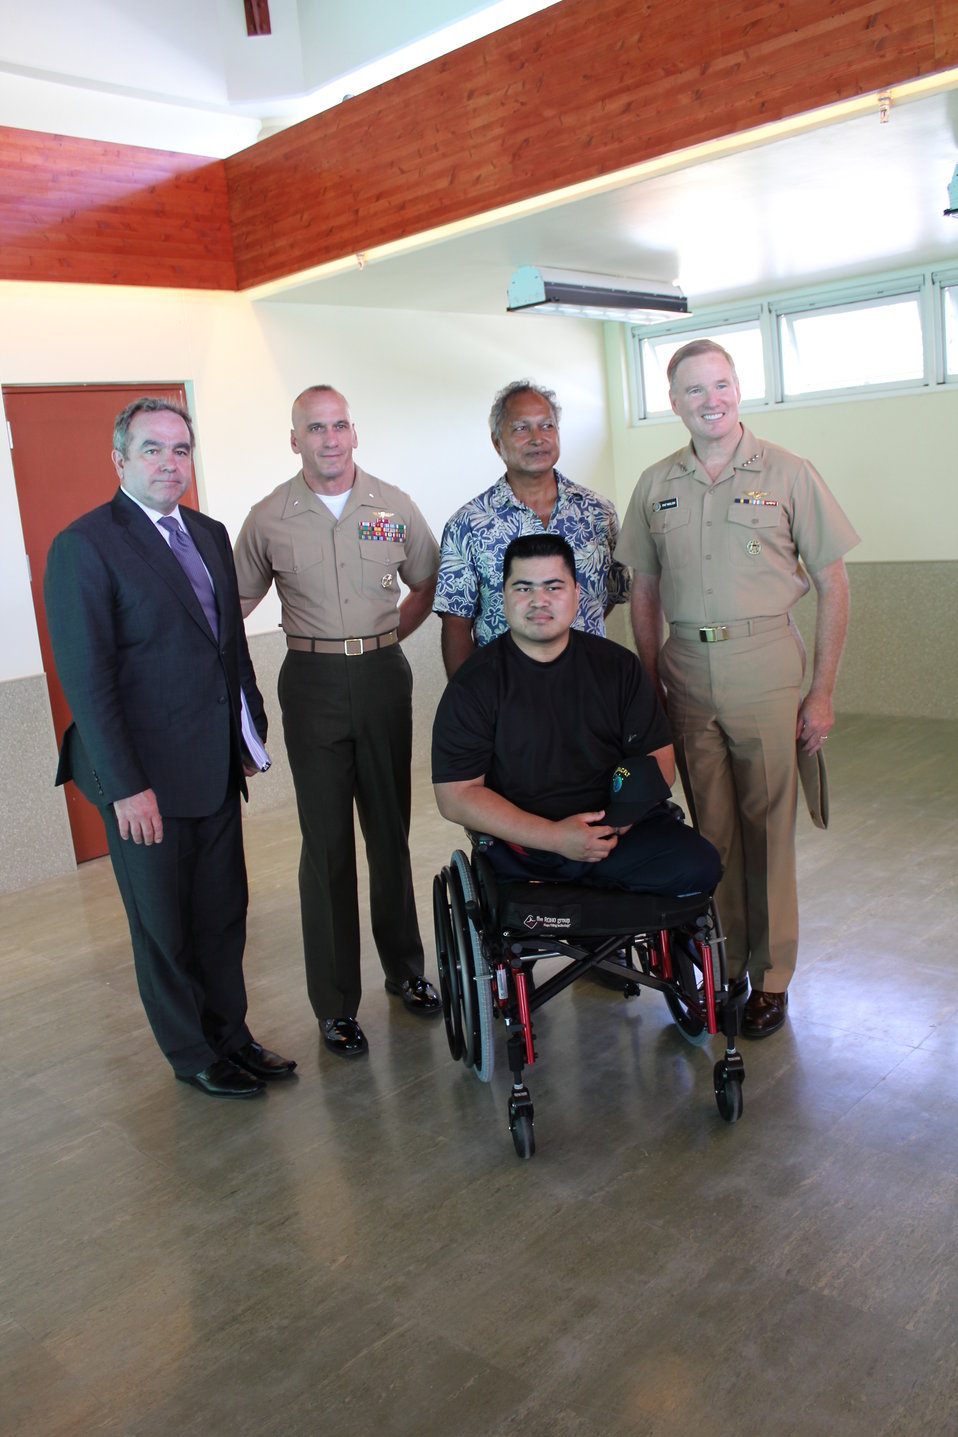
Assistant Secretary Campbell, Brigadier General Simcock, and Adm. Walsh Meet With SPC Bermanis and His Father

Assistant Secretary of State for East Asian and Pacific Affairs Kurt Campbell, Office of the Secretary of Defense South/Southeast Asia Principal Director Brigadier General Richard Simcock, and Pacific Fleet Commander Admiral Patrick Walsh meet with U.S. Army Specialist H.B. Bermanis and his father at Pohnpei International Airport in Palikir, Pohnpei, on July 1, 2011. SPC Bermanis was injured while serving in Iraq in 2003.